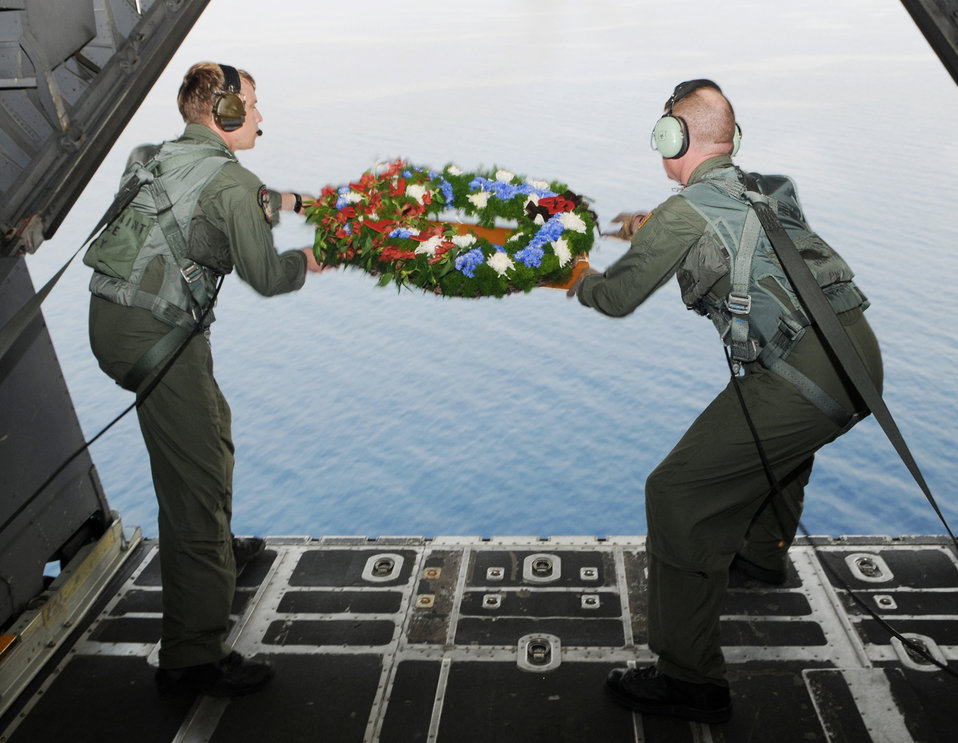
Airmen honor the fallen

Loadmasters Staff Sgt. Jim Kosnosky (left) and Tech. Sgt. Aaron Kay release a memorial wreath out the back of a MC-130H Combat Talon II Feb. 26, 2010, near Capones Island, Philippines. The wreath honors the people killed 28 years ago when